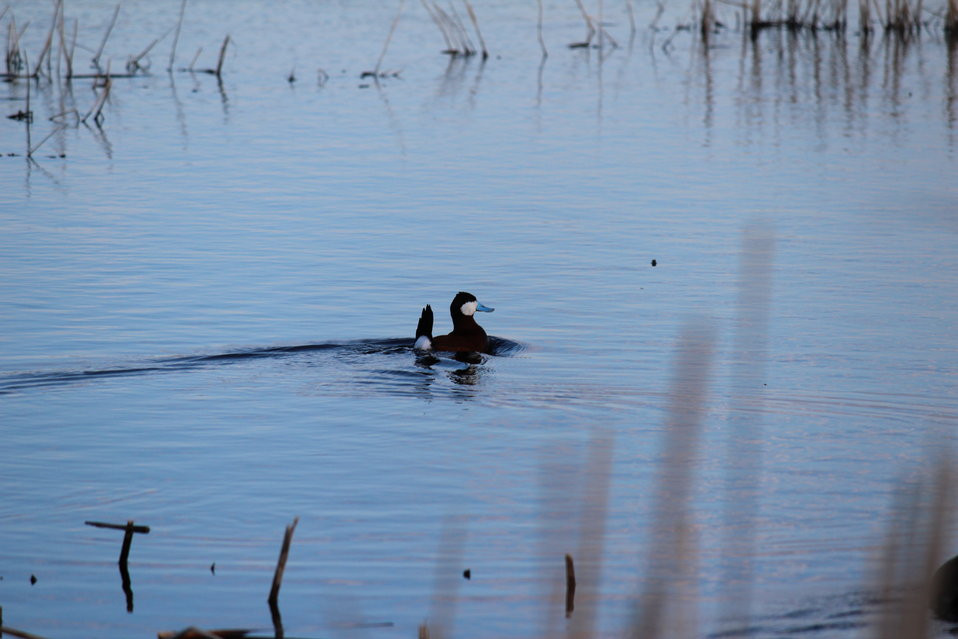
Ruddy Duck Drake

This Ruddy Duck was showing off to his mate who was watching from the safety of the cattails. Picture captured during inspection of this new wetland easement acquisition.

Location: Audubon WMD, Sheridan County, North Dakota

Credit: Doug Mosser/ USFWS

Photo Contest Entry #166